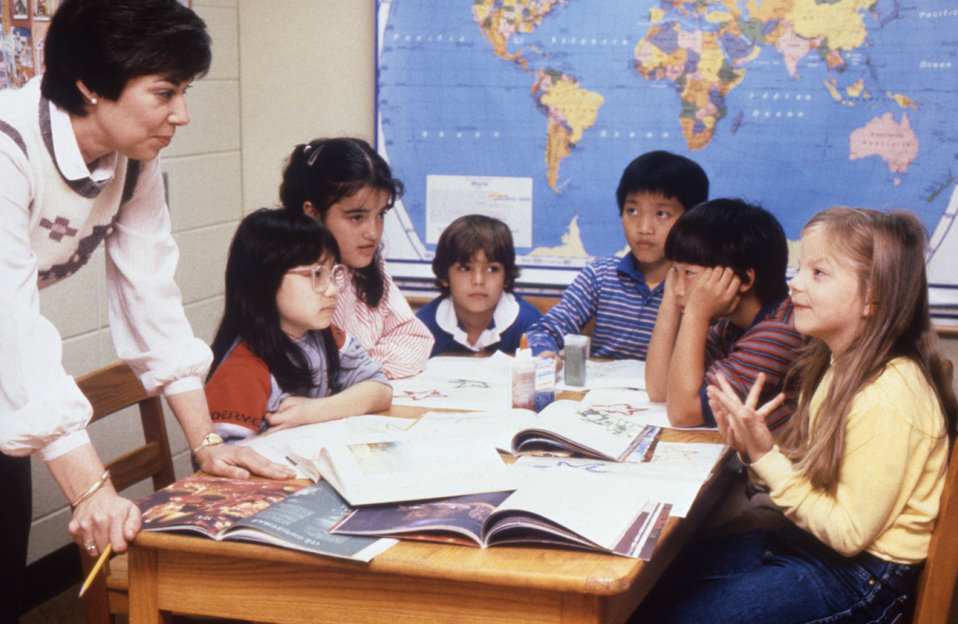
This photograph shows a teacher instructing children during a group assignment.